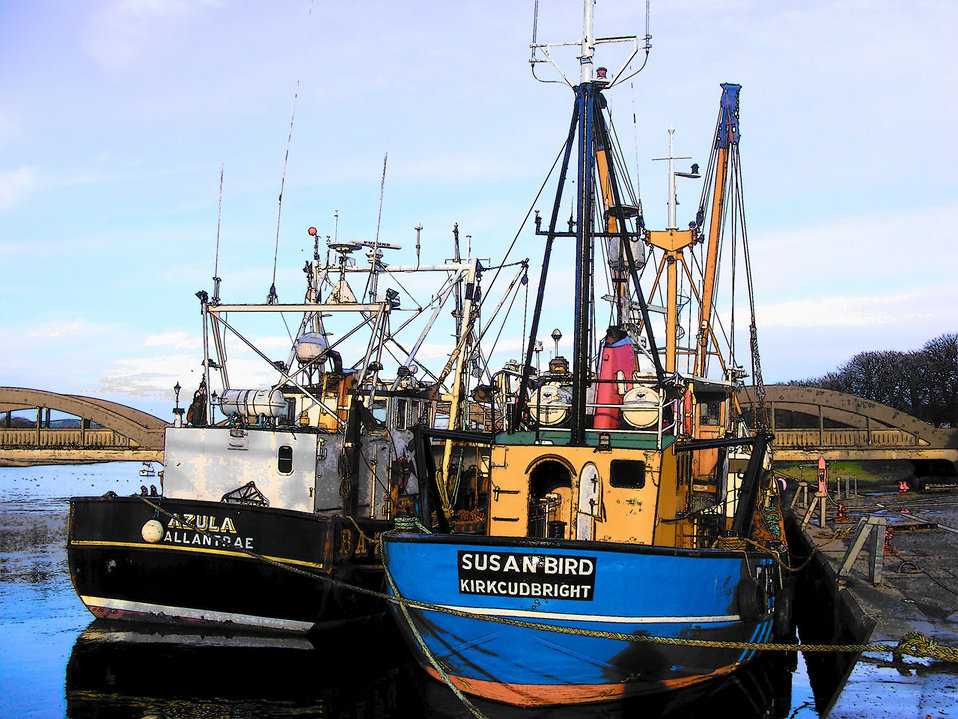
Trawlers alongside kirckudbright, dumfries & galloway.